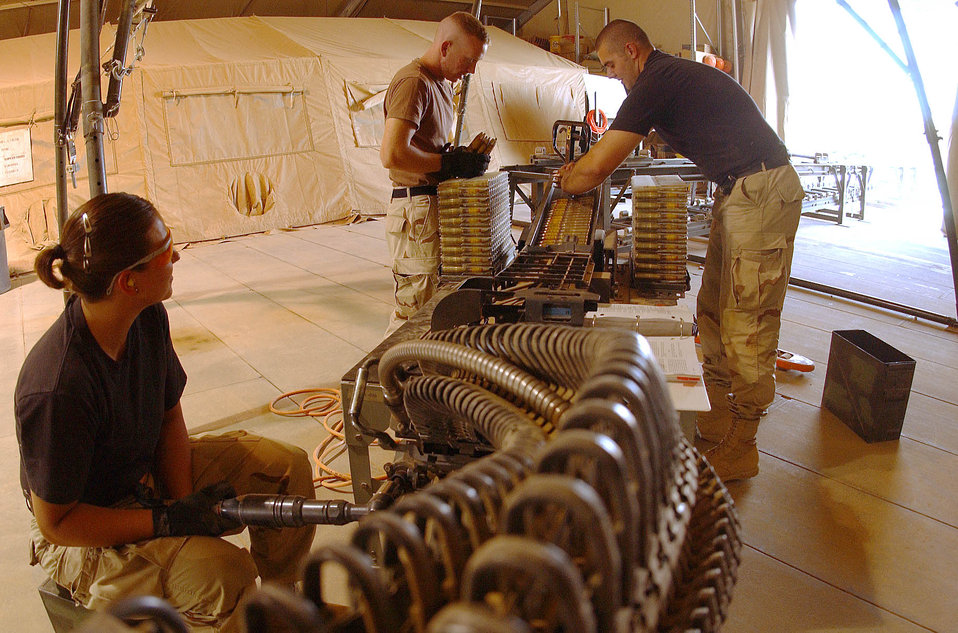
Rounds

BALAD AIR BASE, Iraq -- Airmen 1st Class Sarah Oliver, left, Phillip Coswell, back left and Joseph Oliver, process 20 mm rounds for an F-16 Fighting Falcon. They are all munitions system journeyman assigned to the 332nd Expeditionary Maintenance Squadron. All three are deployed from Aviano Air Base, Italy.